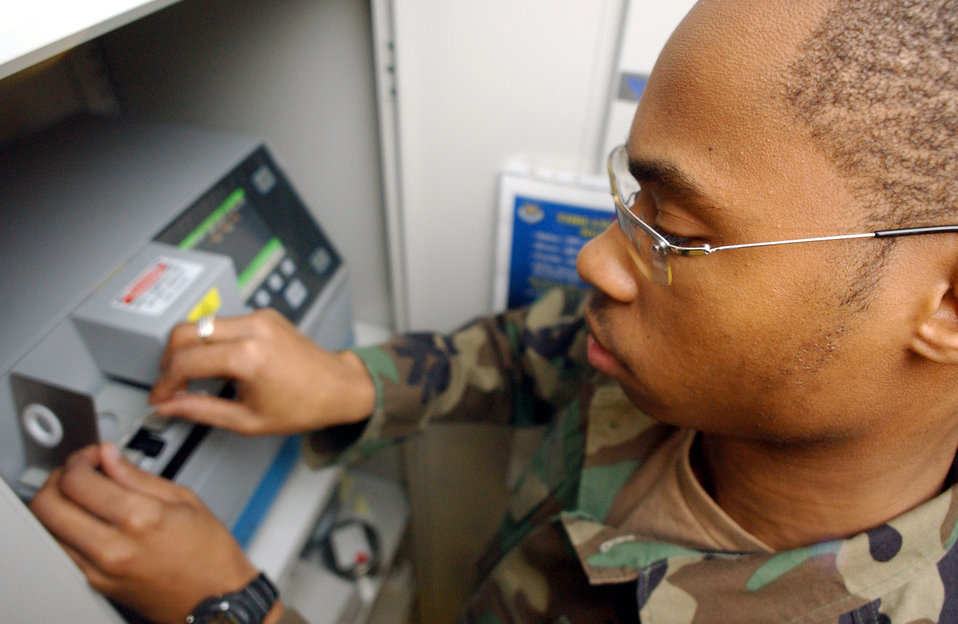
Looking for dirty mail

ROYAL AIR FORCE MILDENHALL, England -- Airman 1st Class Phillip Moody inserts a cotton swab into an ionscan machine April 2 while checking for explosive substances on mail packages. Aiman Moody is a postal clerk with the 100th Communications Squadron.